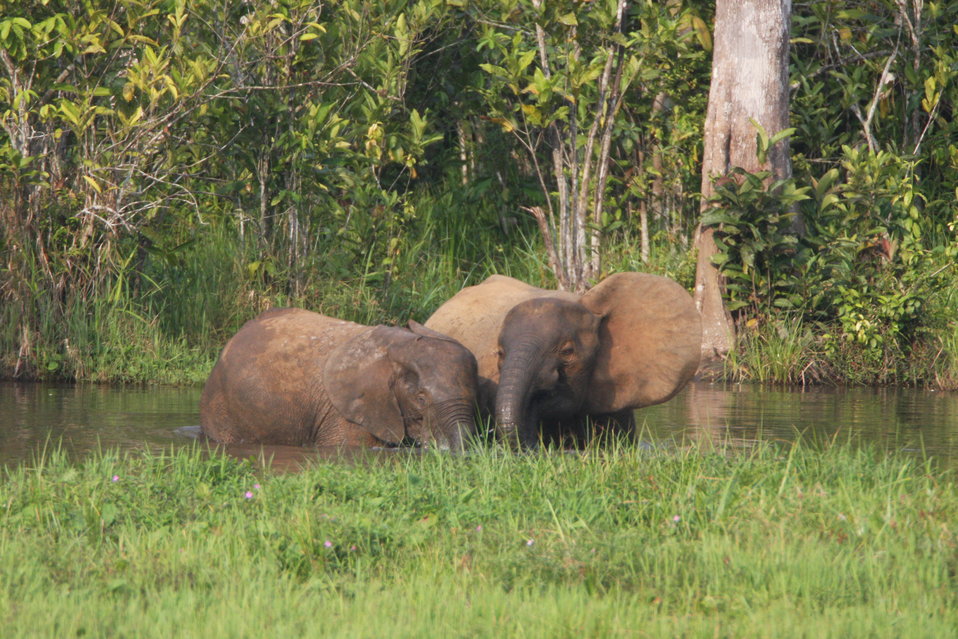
Elephant mother and calves

Female forest elephants have a close bond with all of their families for all their lives. A mother with offspring drinking from a spring.